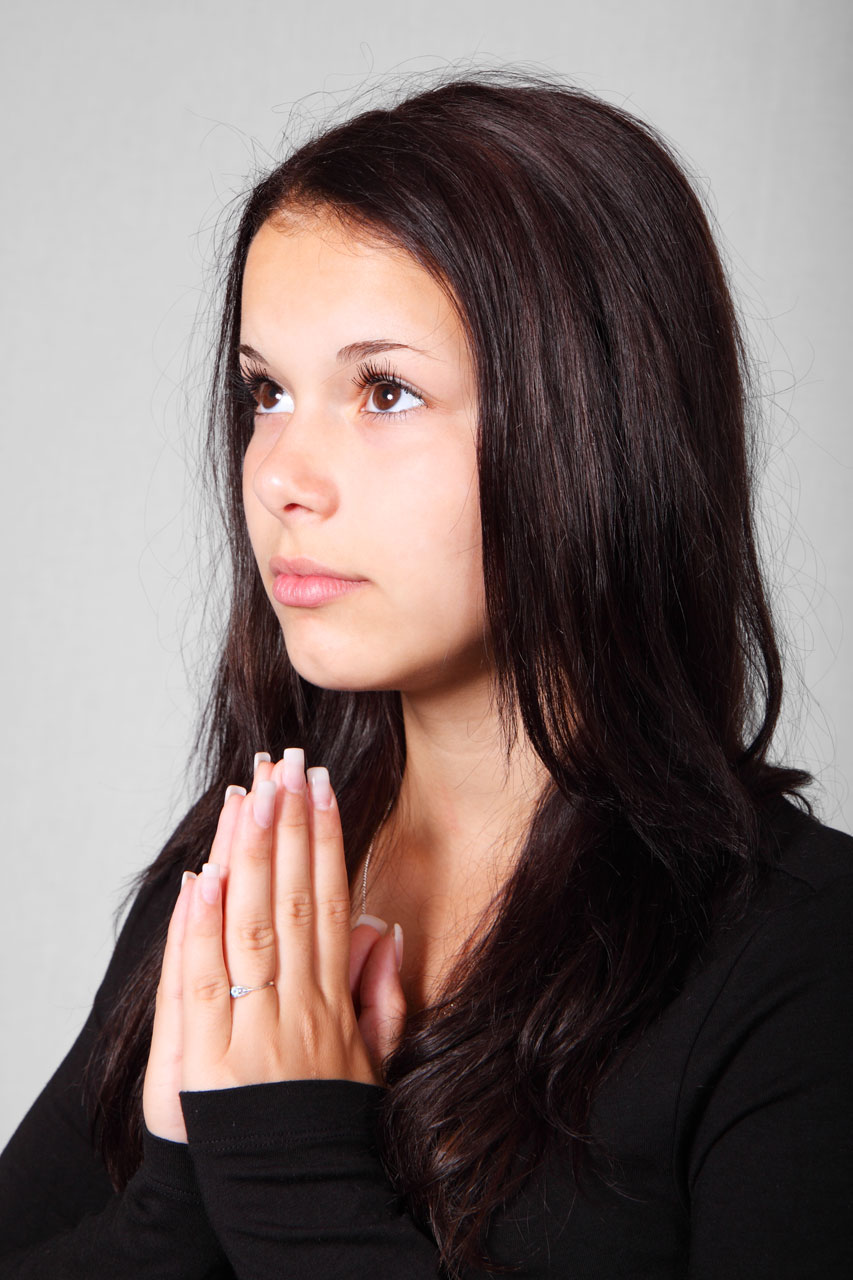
Praying woman

Young woman praying.